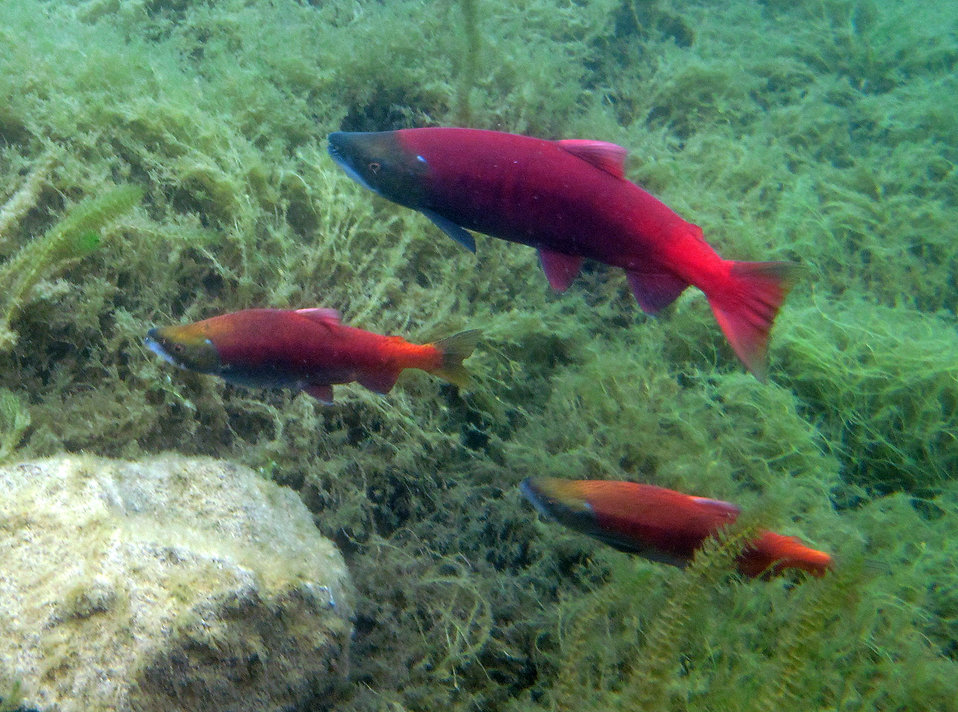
life history variation in Hidden Lake